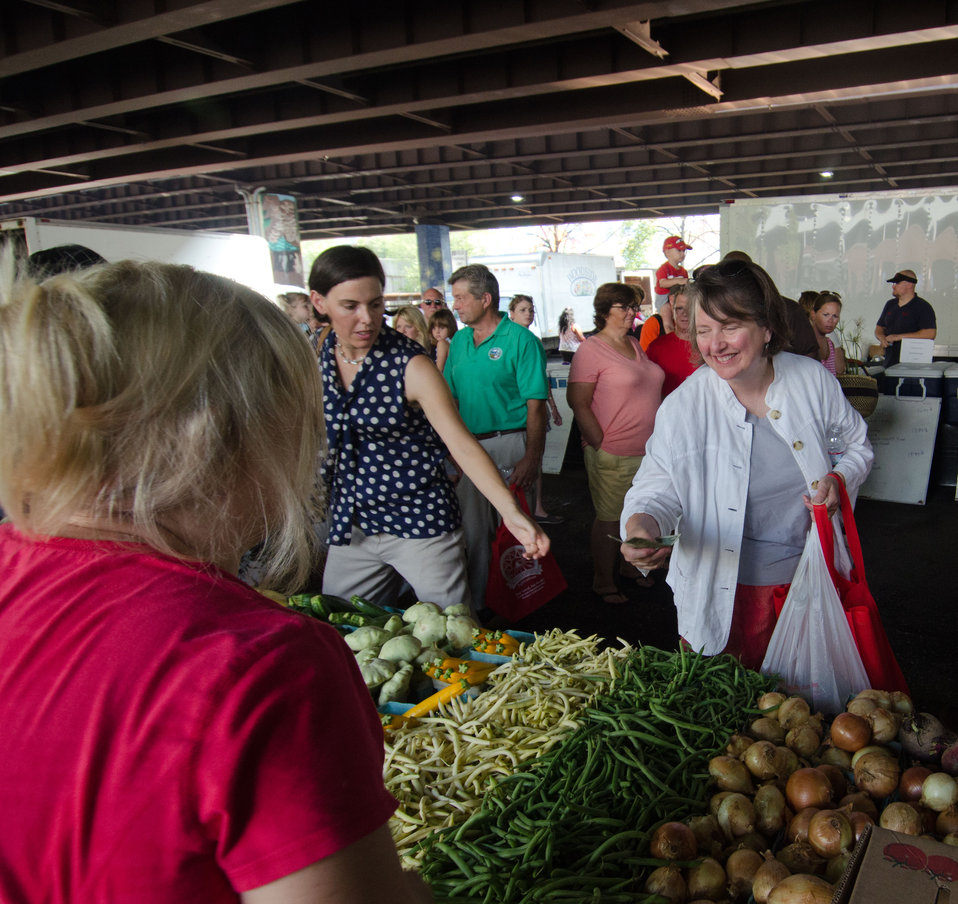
Agriculture Deputy Secretary Kathleen Merrigan (right) pays Michelle Kadlec (left) for green beans and cucumbers at Baltimore’s Farmers Market and Bazaar in Baltimore, MD on Sunday, July 8, 2012. The new wireless portable terminals at the welcome center accept the U.S. Department of Agriculture’s (USDA) Food Nutrition Service’s (FNS) Supplemental Nutrition Assistance Program (SNAP) Electronic Benefits Transfer (EBT) cards, Baltimore Bucks, and debit cards utilizing a wireless connection. “SNAP participation at farmers' markets helps provide fresh fruit and vegetables to families and expands the customer base for local farmers in the Delmarva area, a win-win for agriculture and local communities,” said Agriculture Deputy Secretary Kathleen Merrigan. “And when we couple SNAP access at farmers markets with strategies like education, cooking demonstrations, and community support in the Baltimore area, consumption of healthy foods has potential to grow even more.”